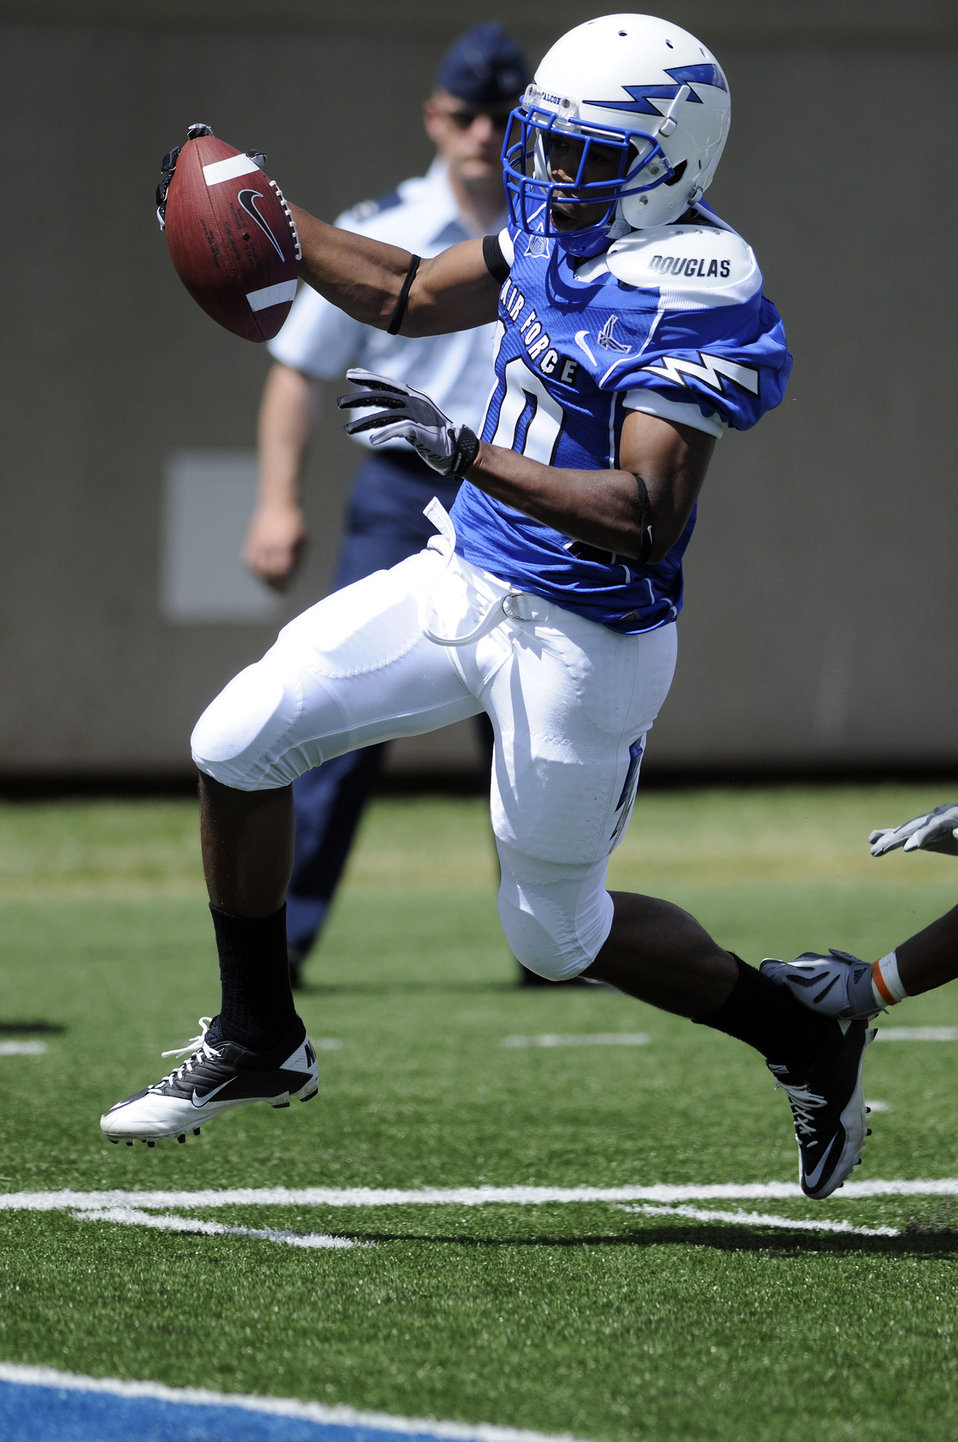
He scores!

Air Force Academy sophomore wide receiver Mikel Hunter heads for the end zone and his first career touchdown during the Falcons' season opener at Falcon Stadium Sept. 4, 2010. The Falcons beat the Northwestern State Demons 65-21.